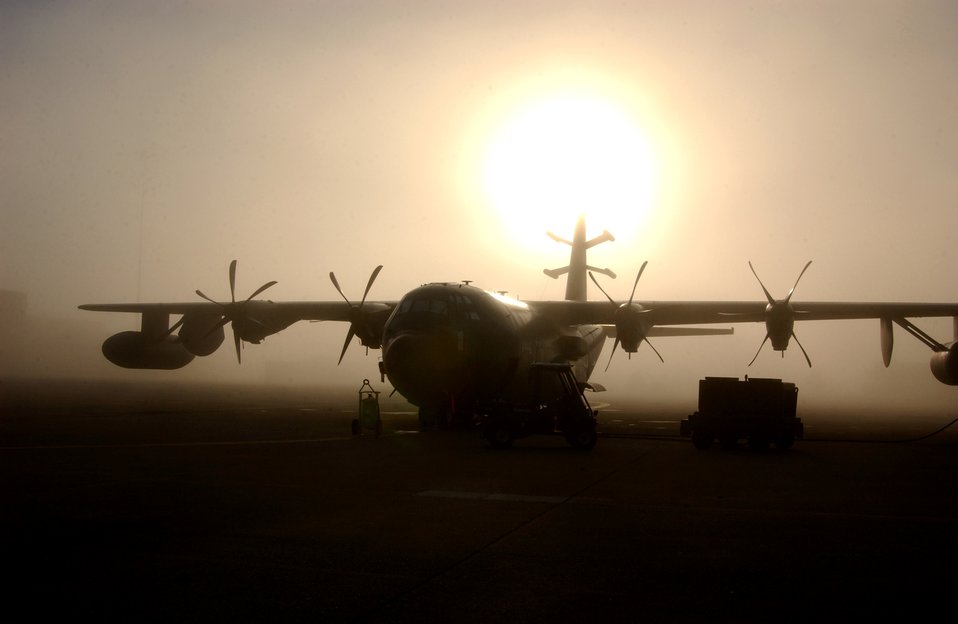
Rise and shine

MIDDLETOWN, Pa. -- The sun rises behind a C-130J at the Pennsylvania Air National Guard's 193rd Special Operations Wing at Harrisburg International Airport here Oct. 1.